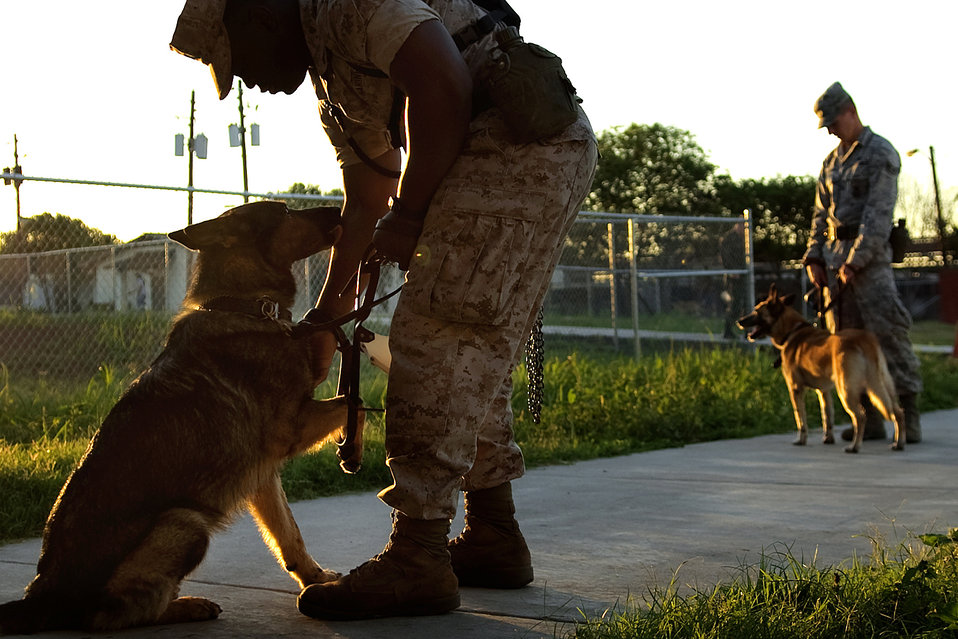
Training for military working dogs

Military working dogs and their handlers wait outside the Military Working Dog Hospital at Lackland Air Force Base, Texas. Military working dogs are enrolled in a 60- to 90-day training program where they are taught to detect explosives and drugs. They are also taught deterrence training and how to protect their handler.